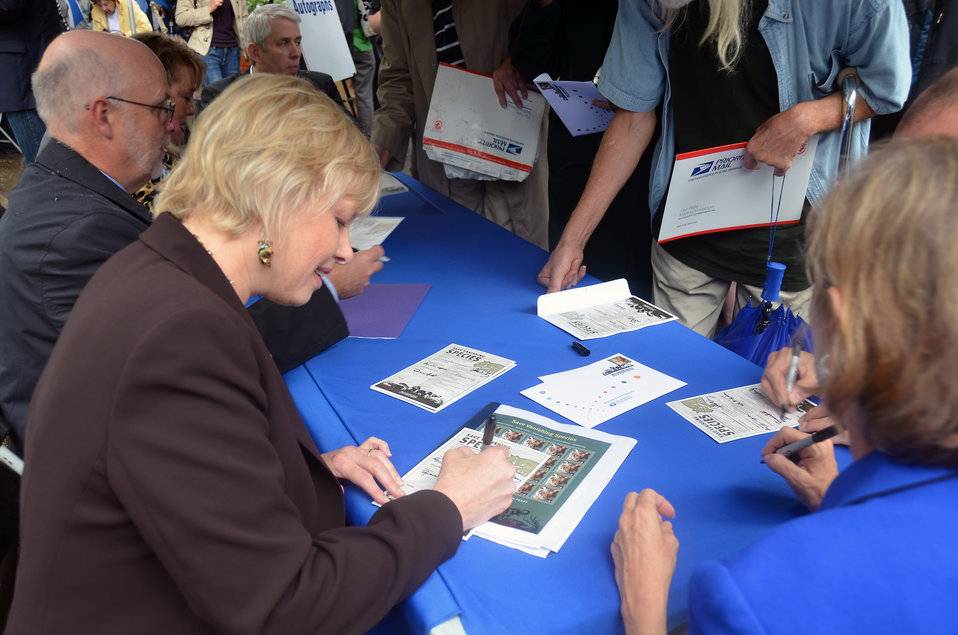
Save Vanishing Species Stamp First Day of Issue